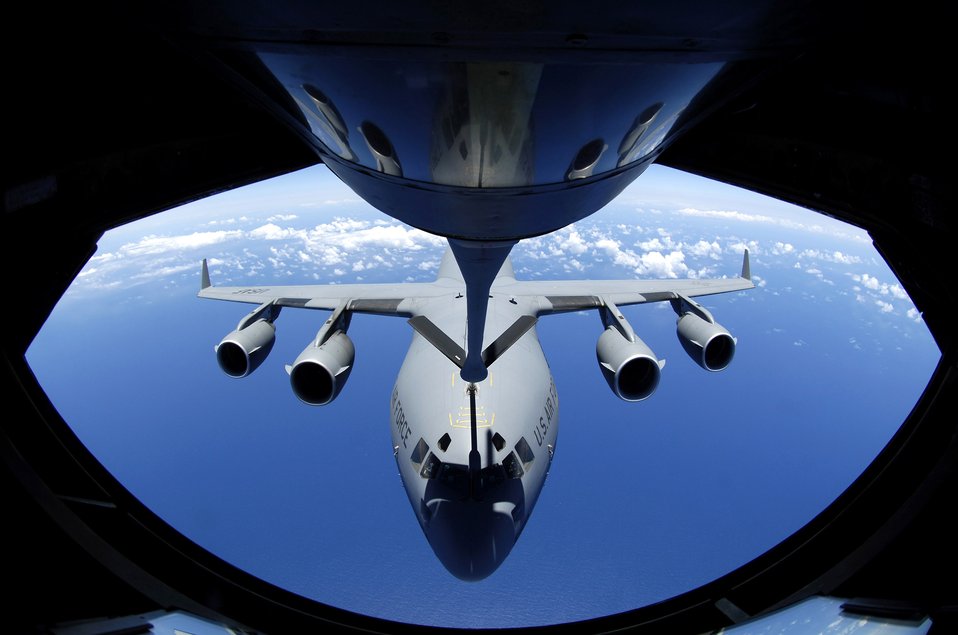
Gas and go?

A C-17 Globemaster III from the 15th Airlift Wing at Hickam Air Force Base, Hawaii, receives fuel June 18 from a KC-135 Stratotanker from the 18th Wing, Kadena Air Base, Japan.